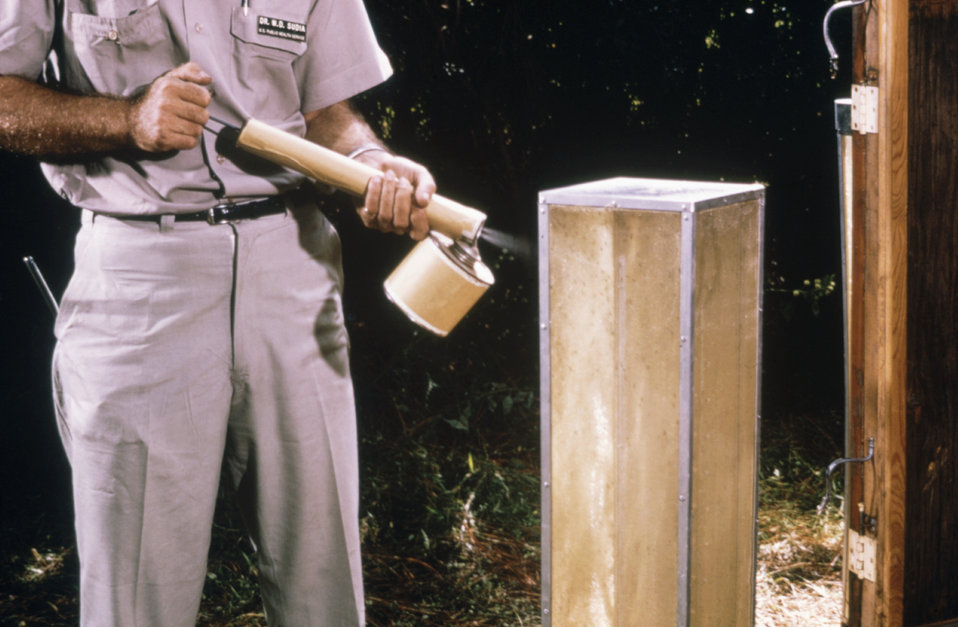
This field researcher is using a hand-held sprayer to knock down mosquitoes on the screen of a horse stable mosquito trap.